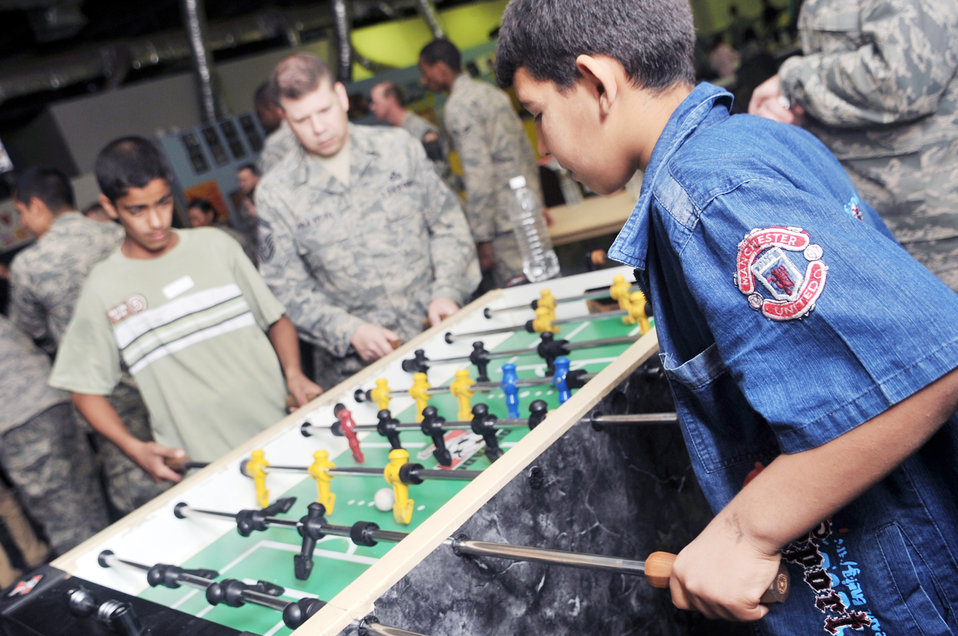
Balad servicemembers strengthen bonds with community, Iraqi children

Senior Master Sgt. James Haavisto plays a game of foosball with two Iraqi boys during Iraqi Kids Day April 24, 2010, at Joint Base Balad, Iraq. Sergeant Haavisto is a 332nd Expeditionary Operations Support Squadron NCO in charge of the weather flight.